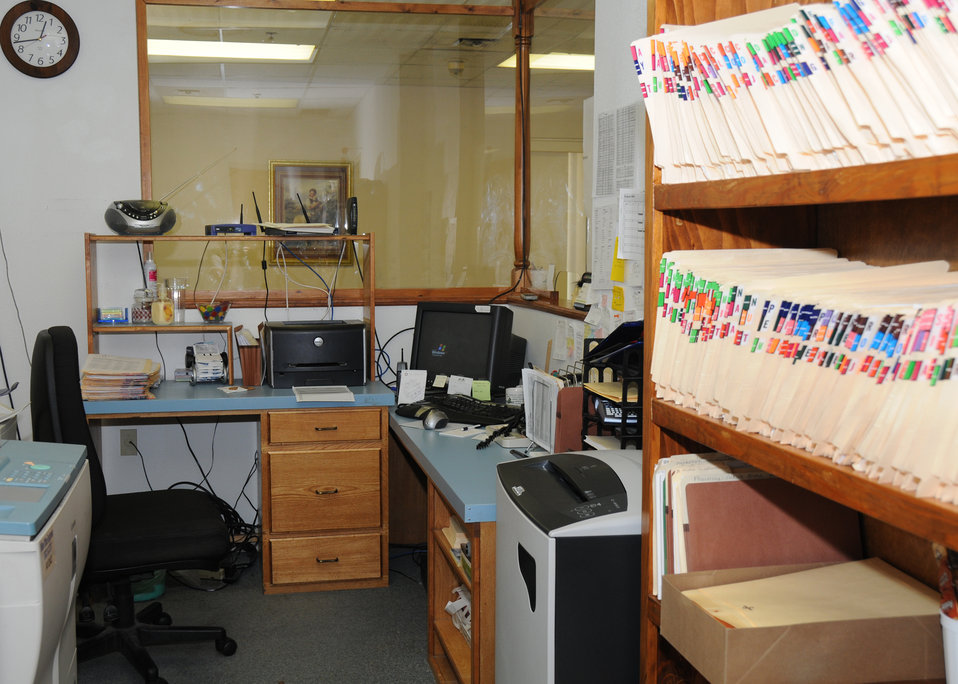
Hope Medical Clinic Corporation is a community-based non profit organization that assists the citizens of Atoka, Oklahoma who do have health insurance. They are presently open one day a month in borrowed offices. The clinic received American Recovery and Reinvestment (ARRA) funds (6,000.00) through Rural Development to purchase its own computer and medical equipment. This will help the clinic to open one day a week instead of once a month.